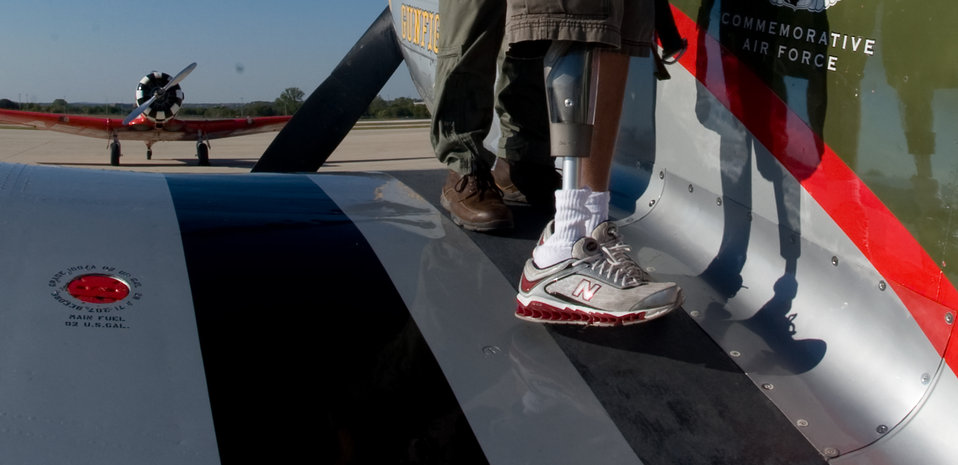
Warrior Flight